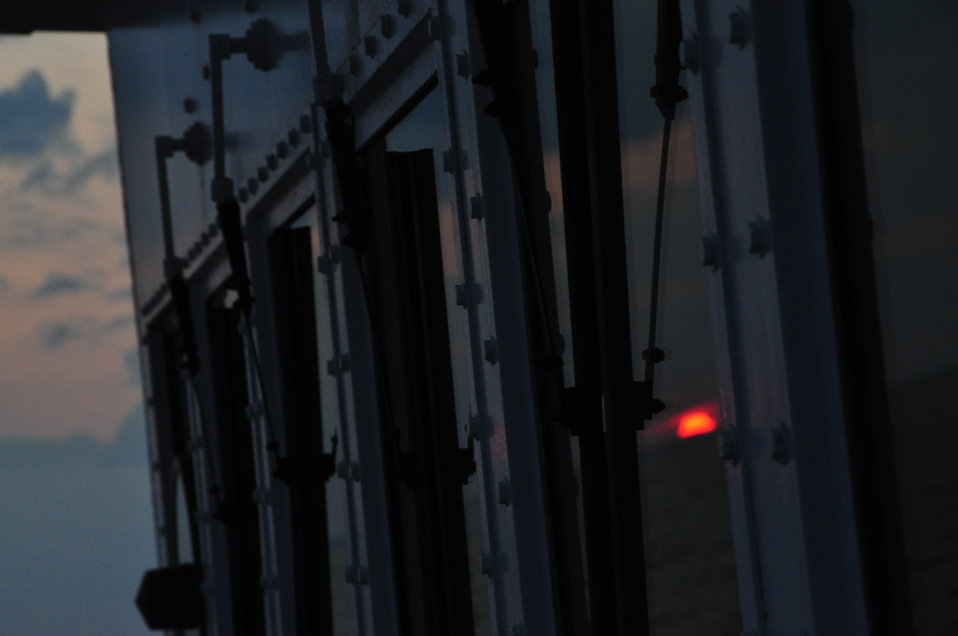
July 2009, Sunset reflects in bridge window

Heading further into the Bay of Fundy watching the sunset from the bridge deck.